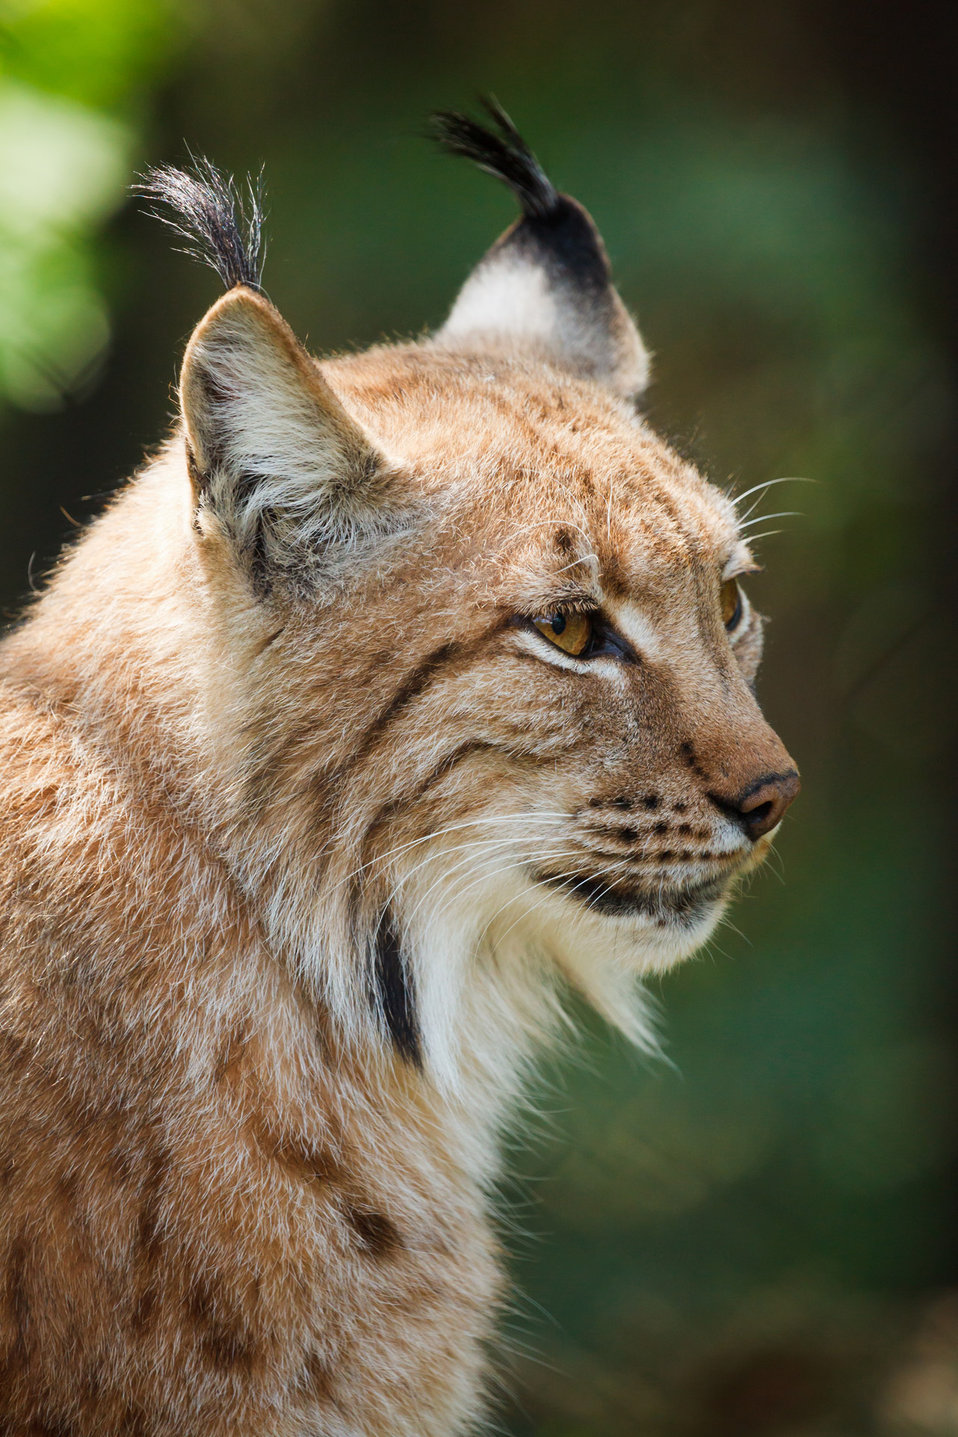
Lynx portrait.